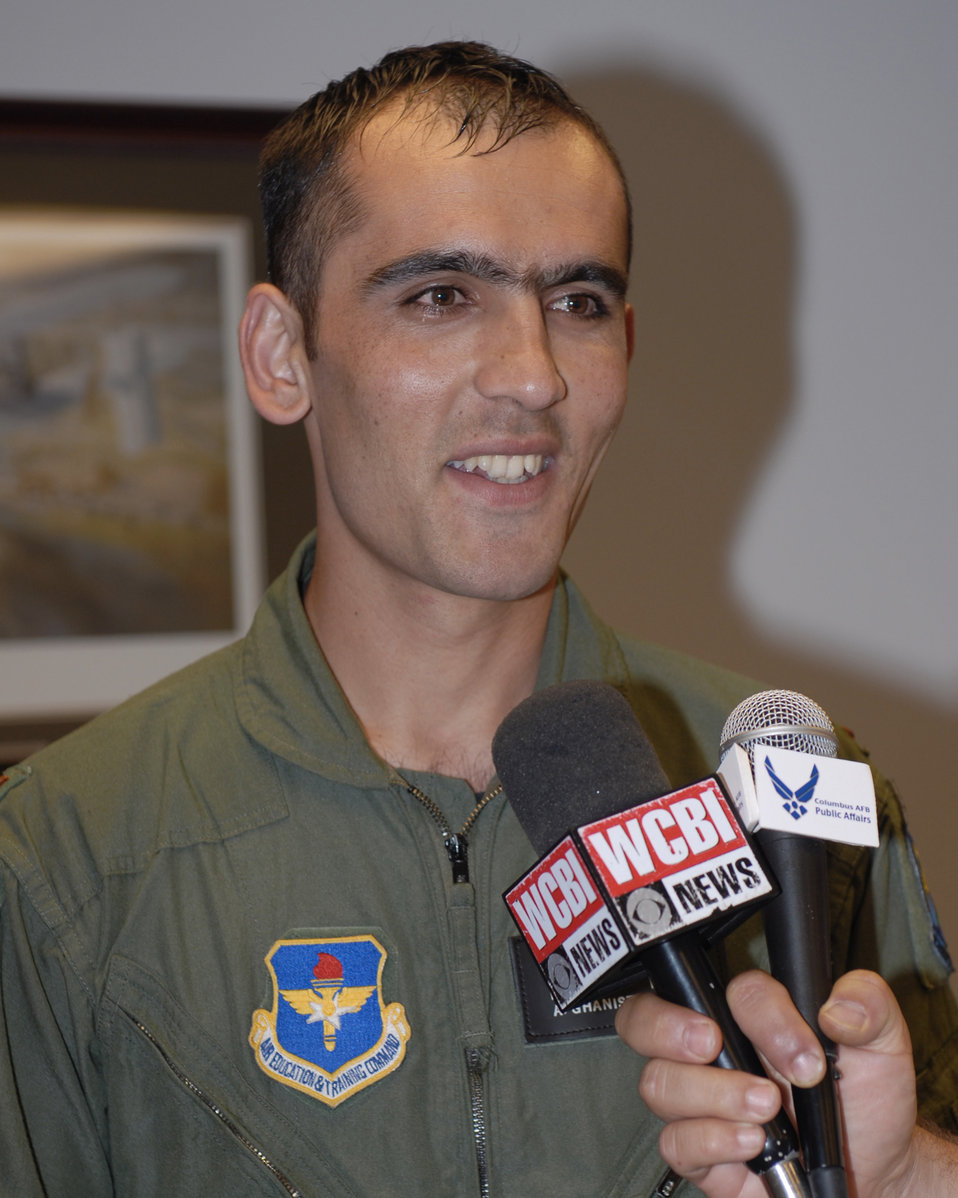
Afghan officer earns pilot's wings

Afghan national army air corps Lt. Faiz Ramaki speaks to press following his Aviation Leadership Program graduation ceremony June 12. Lieutenant Ramaki is the first Afghan student to graduate from U.S. pilot training in almost 50 years. Lt. Ramaki will go to fly the C-27A Spartan in the Afghan air corps.